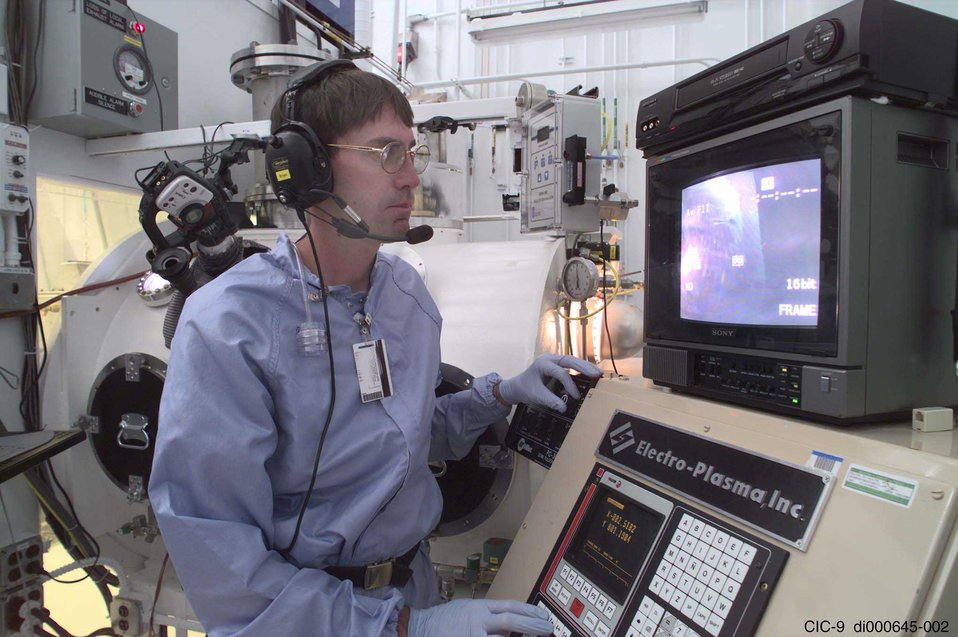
WORKING INSIDE THE BERYLLIUM TECHNOLOGY FACILITY AT LOS ALAMOS NATIONAL LABORATORY.

THE BERYLLIUM TECHNOLOGY FACILITY AT DOE'S LOS ALAMOS NATIONAL LABORATORY RECEIVED A DEFENSE PROGRAMS AWARD OF EXCELLENCE FROM THE DEPARTMENT'S NATIONAL NUCLEAR SECURITY ADMINISTRATION. THIS FACILITY IS THE FIRST STATE-OF-THE-ART FACILITY IN THE U.S. DESIGNED SPECIFICALLY FOR WORKING WITH BERYLLIUM.